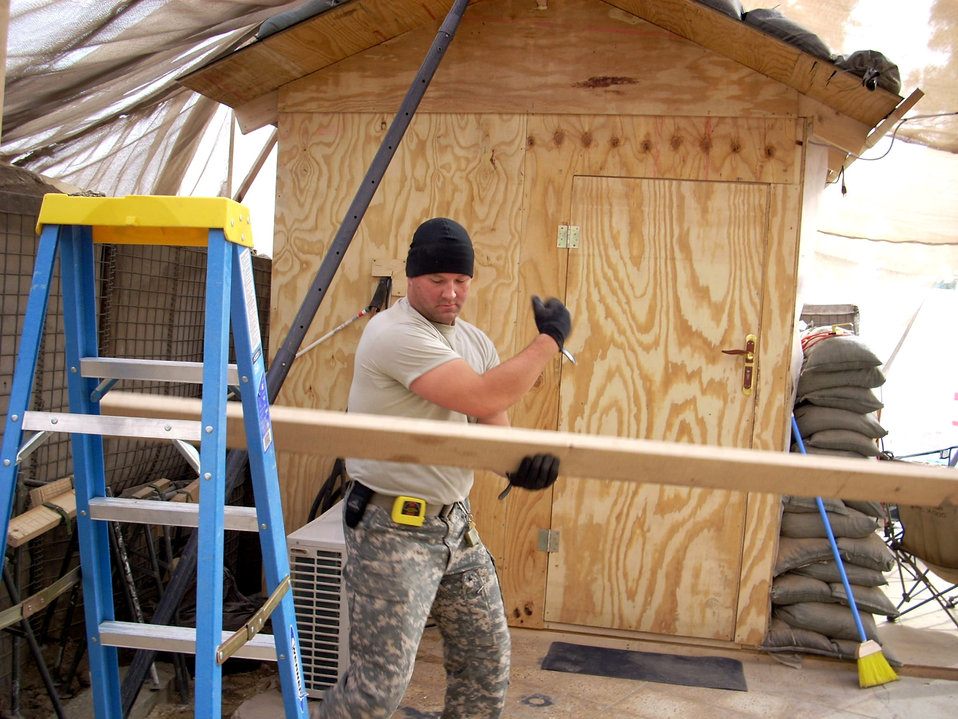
Balad Airmen help improve quality of life for Soldiers in Iraq

Tech. Sgt. Greg Bass carries lumber for the construction of the triage overhang Jan. 11 at Patrol Base Olson, Iraq. Sergeant Bass, a 732nd Expeditionary Civil Engineer Squadron Det. 6 structural technician, is deployed from Kadena Air Base, Japan.